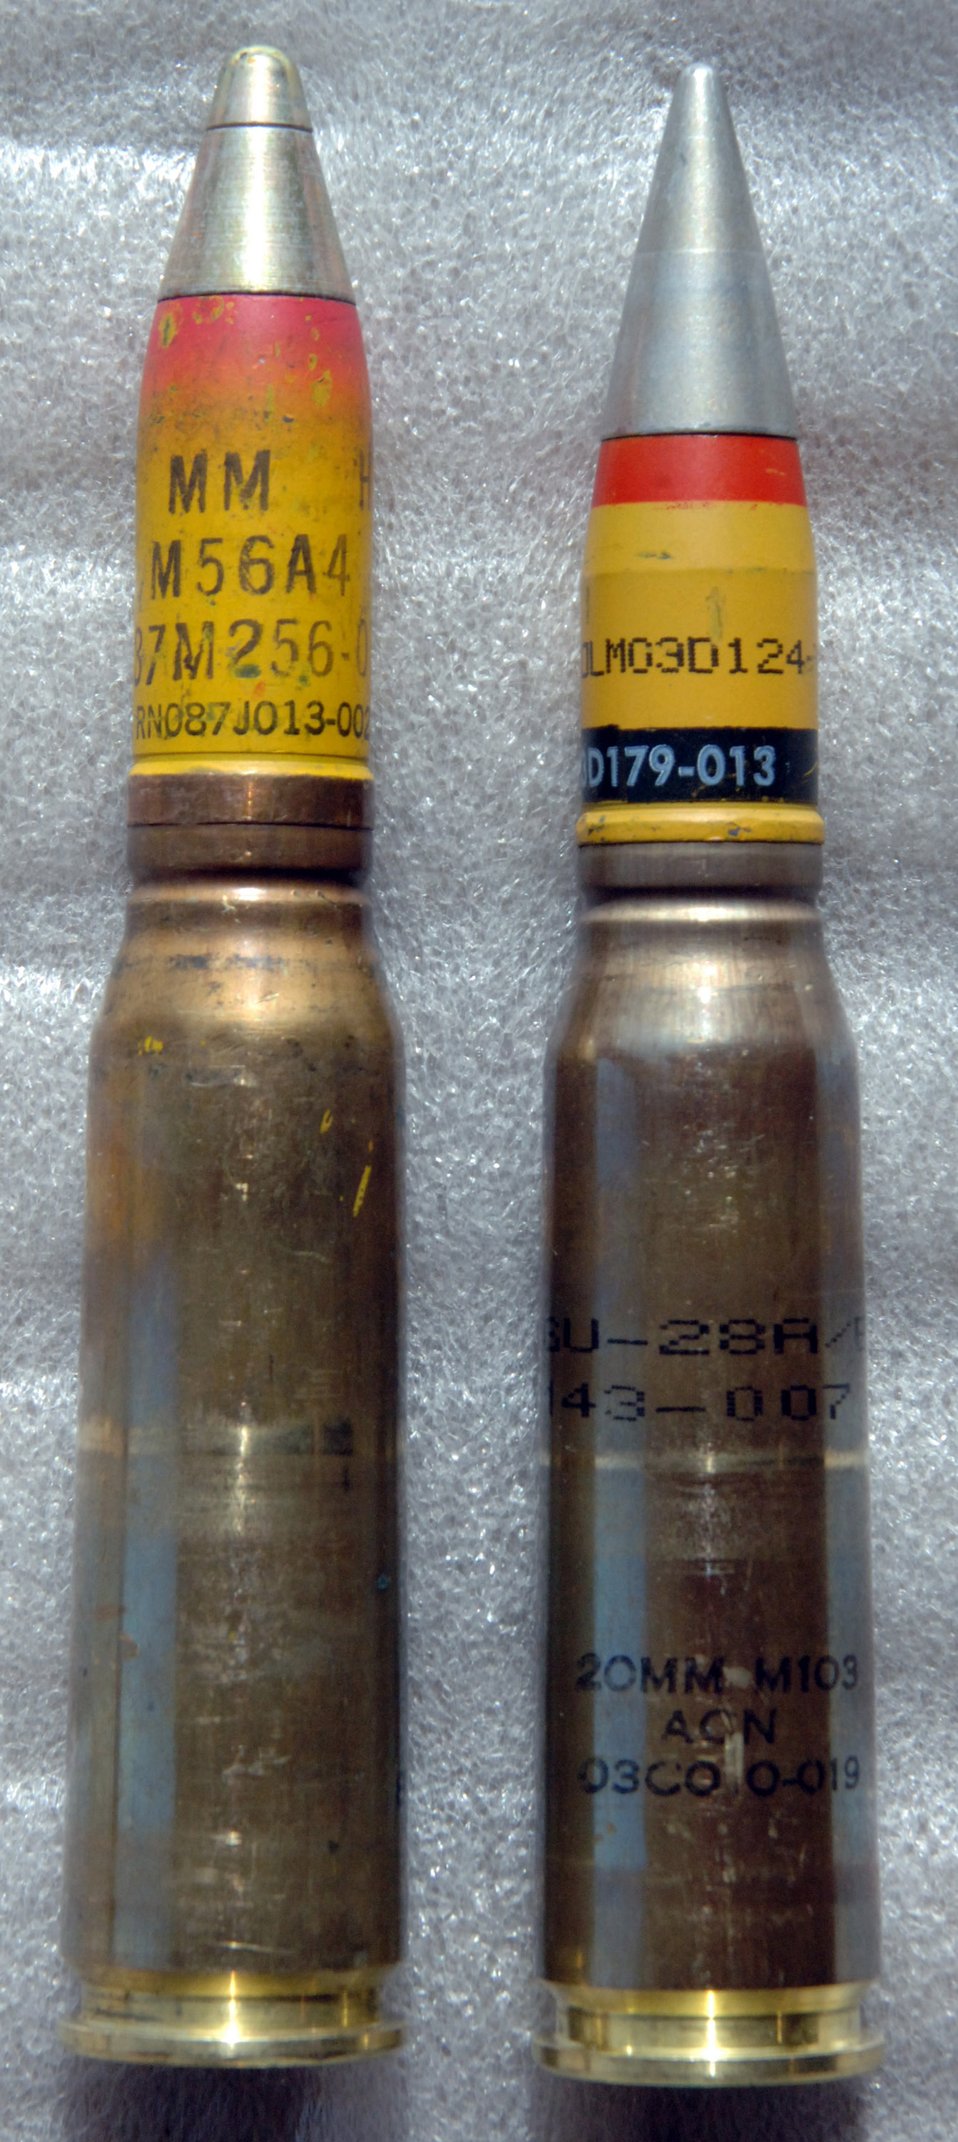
New ammo improves pilot safety, reduces collateral damage

The more aerodynamic, higher velocity PGU 28A/B 20mm cannon round (right) replaced the M56 round long used by F-16 Fighting Falcon pilots. The new ammo allows for higher velocity, a greater standoff distance and increased safety for pilots, all contributing to greater effectiveness while providing close-air support. Its use Feb. 26 against insurgents east of Baghdad, Iraq, marked the first in battle for Air Force F-16 Fighting Falcon pilots.